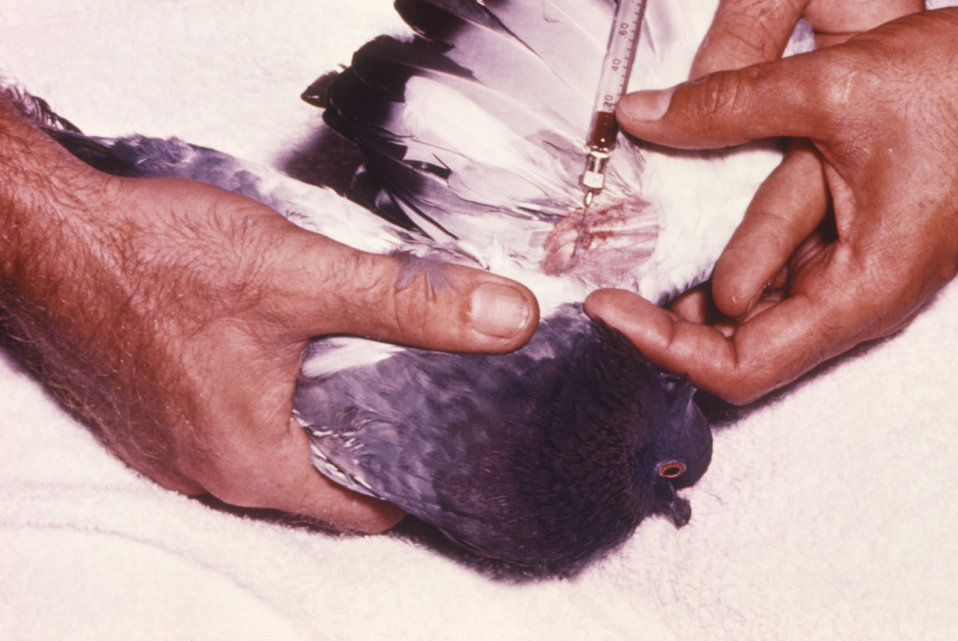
Here blood is being extracted from the wing vein of a pigeon to later be tested for the presence of arboviruses.